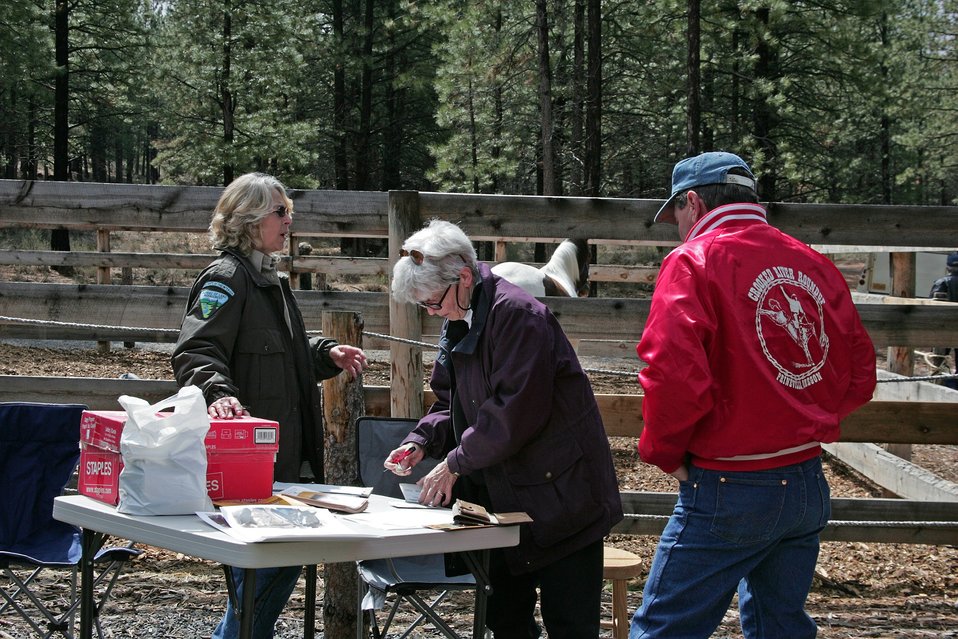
BLM's JoAnne Armson registers pontential bidders for the wild horse auction at the High Desert Museum in Bend, Oregon.